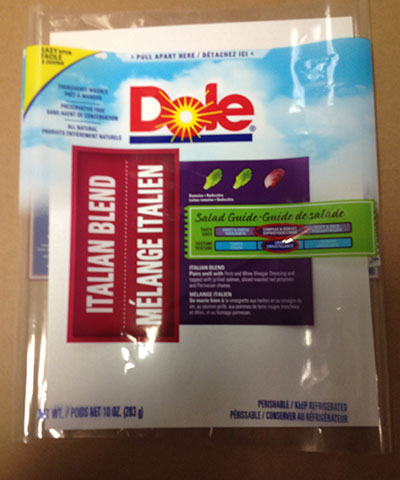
RECALLED – Variety of Bagged salads

March 13, 2014 – Product Recall – Dole Fresh Vegetables Voluntarily Recalls Limited Number of Bagged Salads Due to Possible Health Risk.